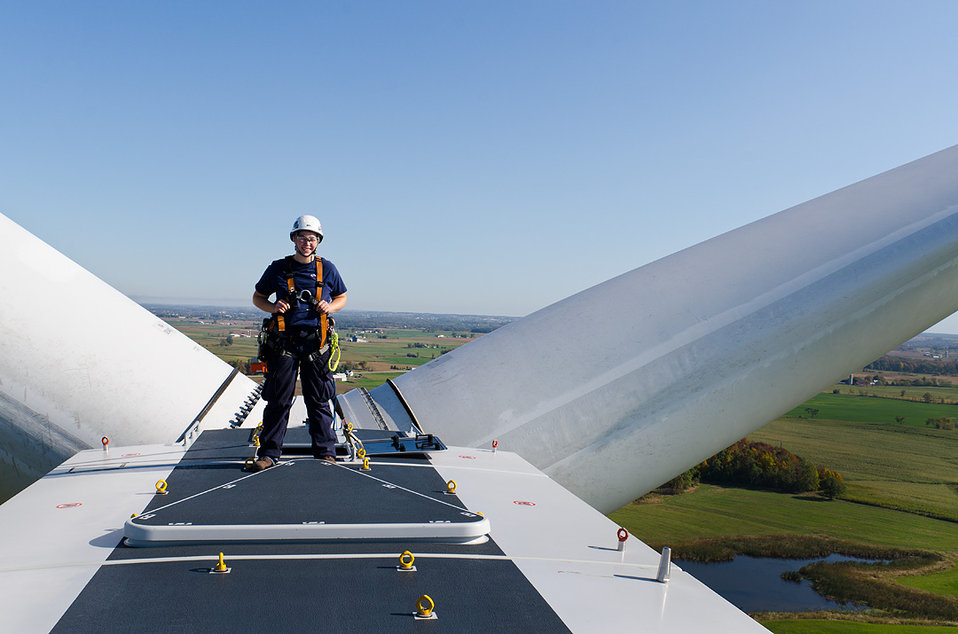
Shirley Wind Farm - Green Bay, Wisconsin.